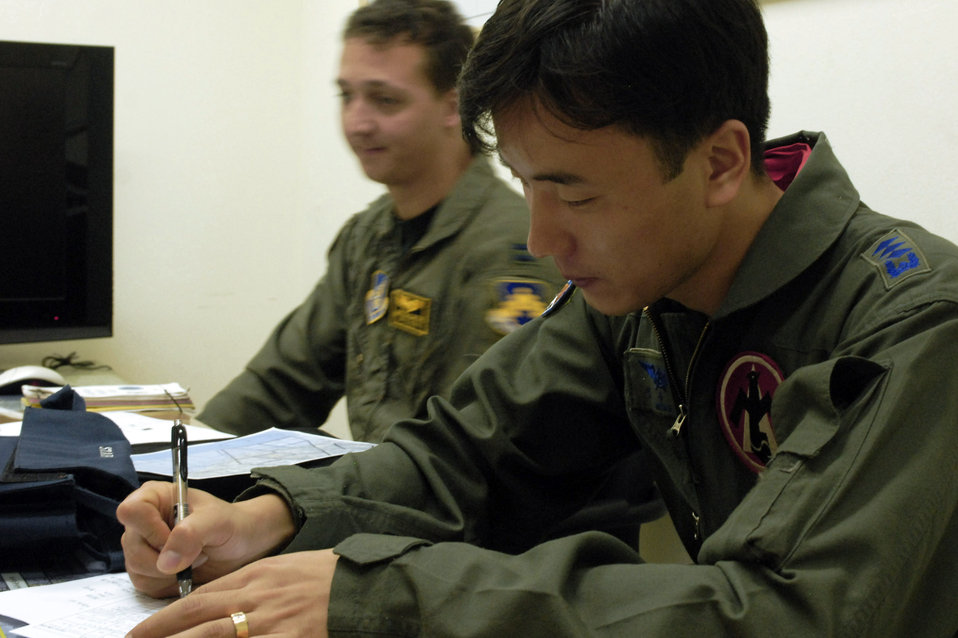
Buddy Wing Program teams up U.S., Korean Airmen

South Korea air force Capt. Sang-su Jung (foreground) takes notes as U.S. Air Force Capt. Michael McCarthy gives a pre-flight brief during the Buddy Wing program at Jungwon Air Base Oct. 24. Captain Jung is a pilot assigned to the 161st Fighter Squadron and Capt. McCarthy is a pilot assigned to the 80th Fighter Squadron, Kunsan Air Base, South Korea. The Buddy Wing program is a way for U.S. Air Force and South Korea air force to develop teamwork, exchange ideas and improve war time tactics.